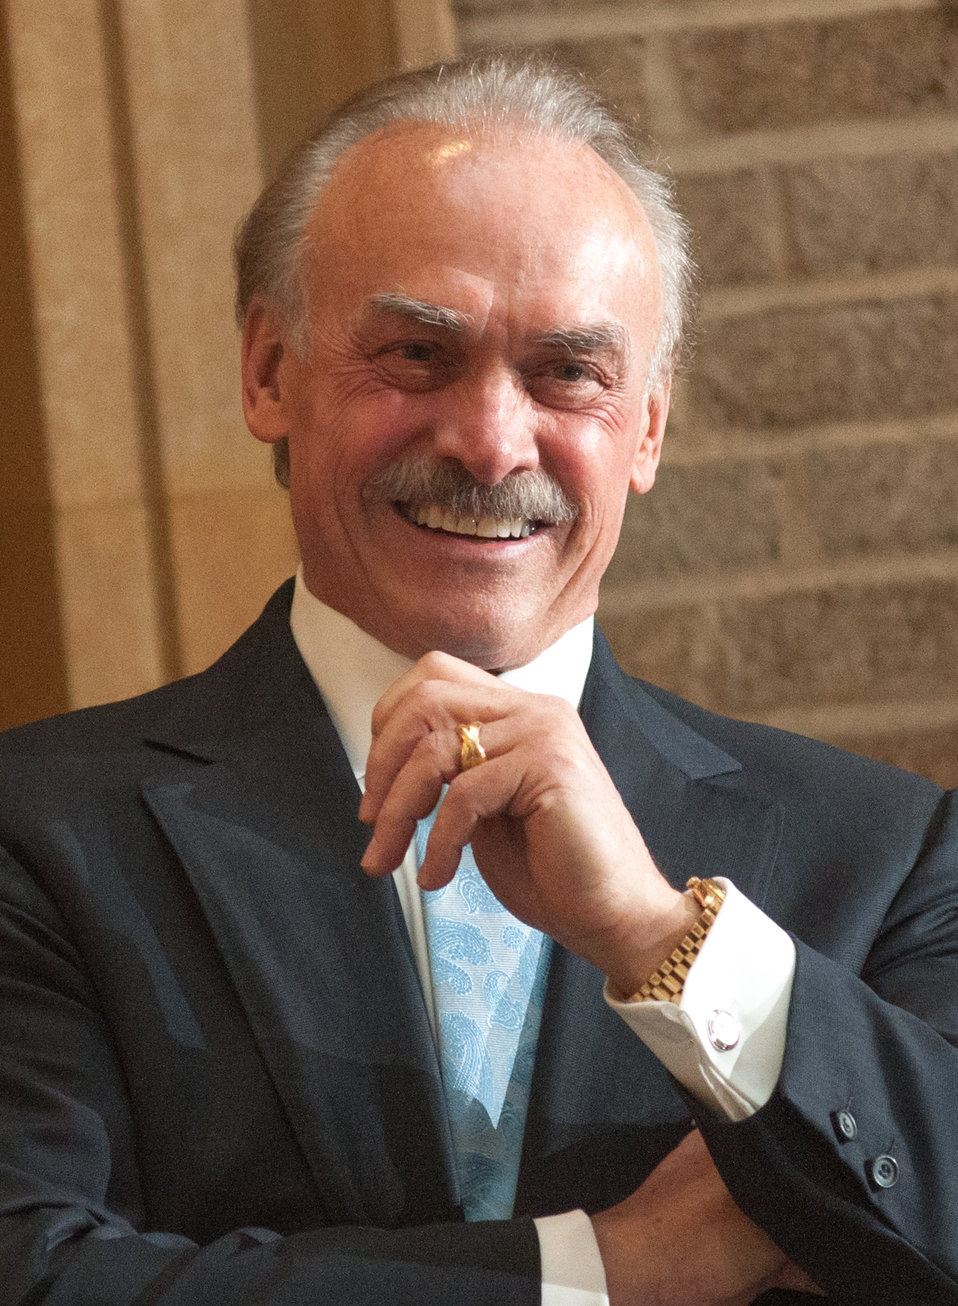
Keynote speaker and former National Football League Pittsburgh Steelers halfback Robert Patrick 'Rocky' Bleier listens to Agriculture Secretary Tom Vilsack speak at a luncheon with dairy producers, Dairy Management, Inc., (DMI) and other stakeholders from the dairy producers industry, at the Whitten Building Patio, in Washington, D.C. on Tuesday, Feb. 26, 2013. 'Rocky' Bleier spoke about the importance of milk in his childhood growth, and recounted some of his historic game-winning football plays.